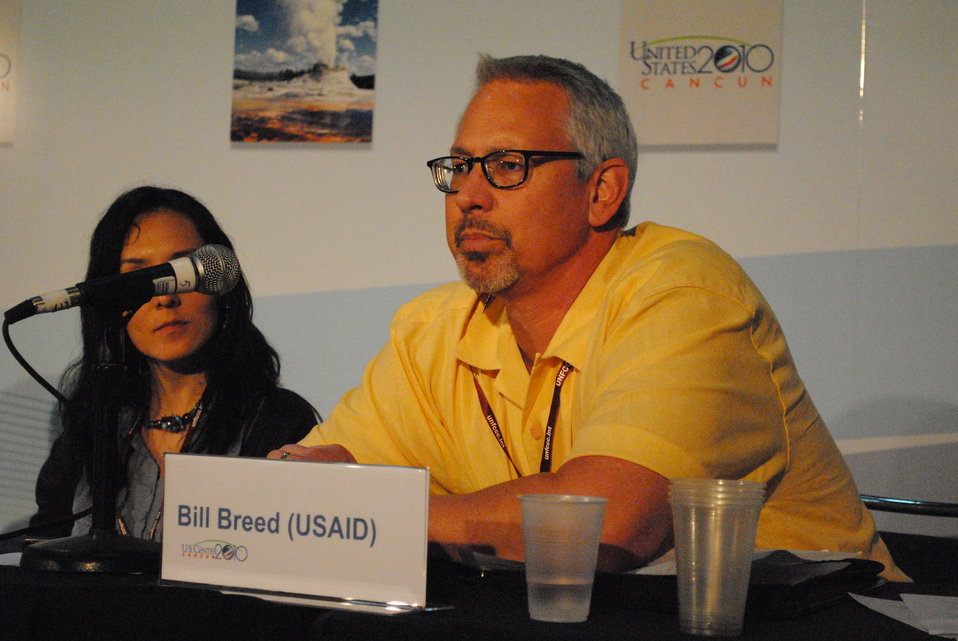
USAID's Bill Breed responds to questions during a side event at the U.S. Center at COP-16 in Cancun, Mexico, on December 2, 2010.